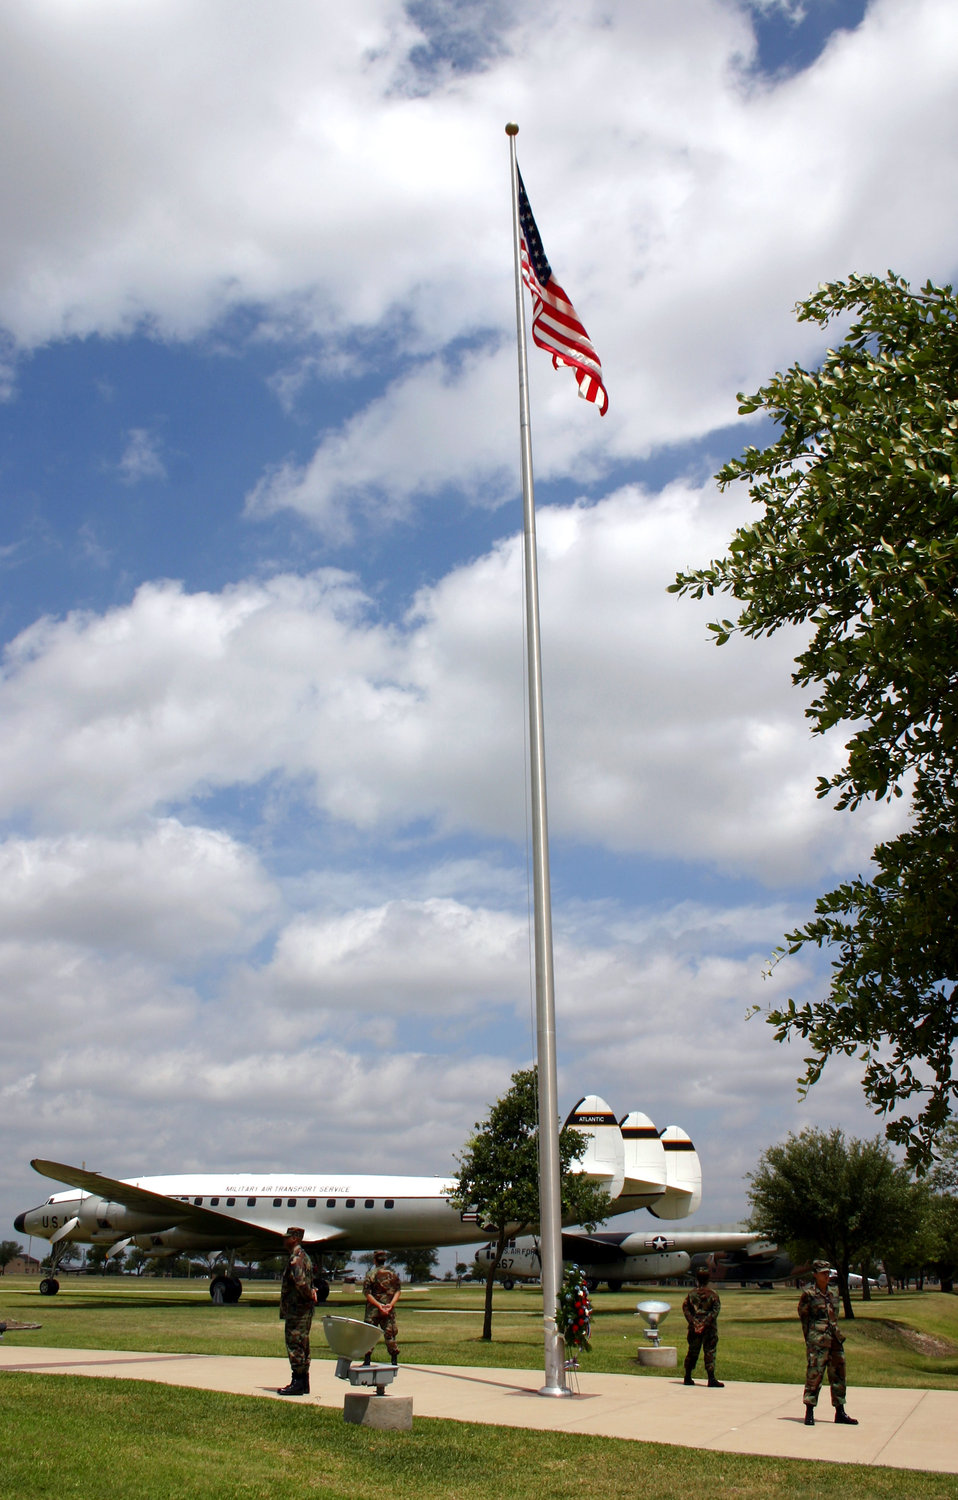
Silent vigil

Four Airmen from the 59th Medical Wing's physical medicine flight stand in silent vigil at Lackland Air Force Base, Texas, on Friday, May 26, 2006. The vigil, part of the base's Memorial Day observances, honored the contributions of servicemembers who are, or were, missing in action or prisoners of war. Each shift stood vigil for 10 minutes during the eight-and-a-half-hour observance.